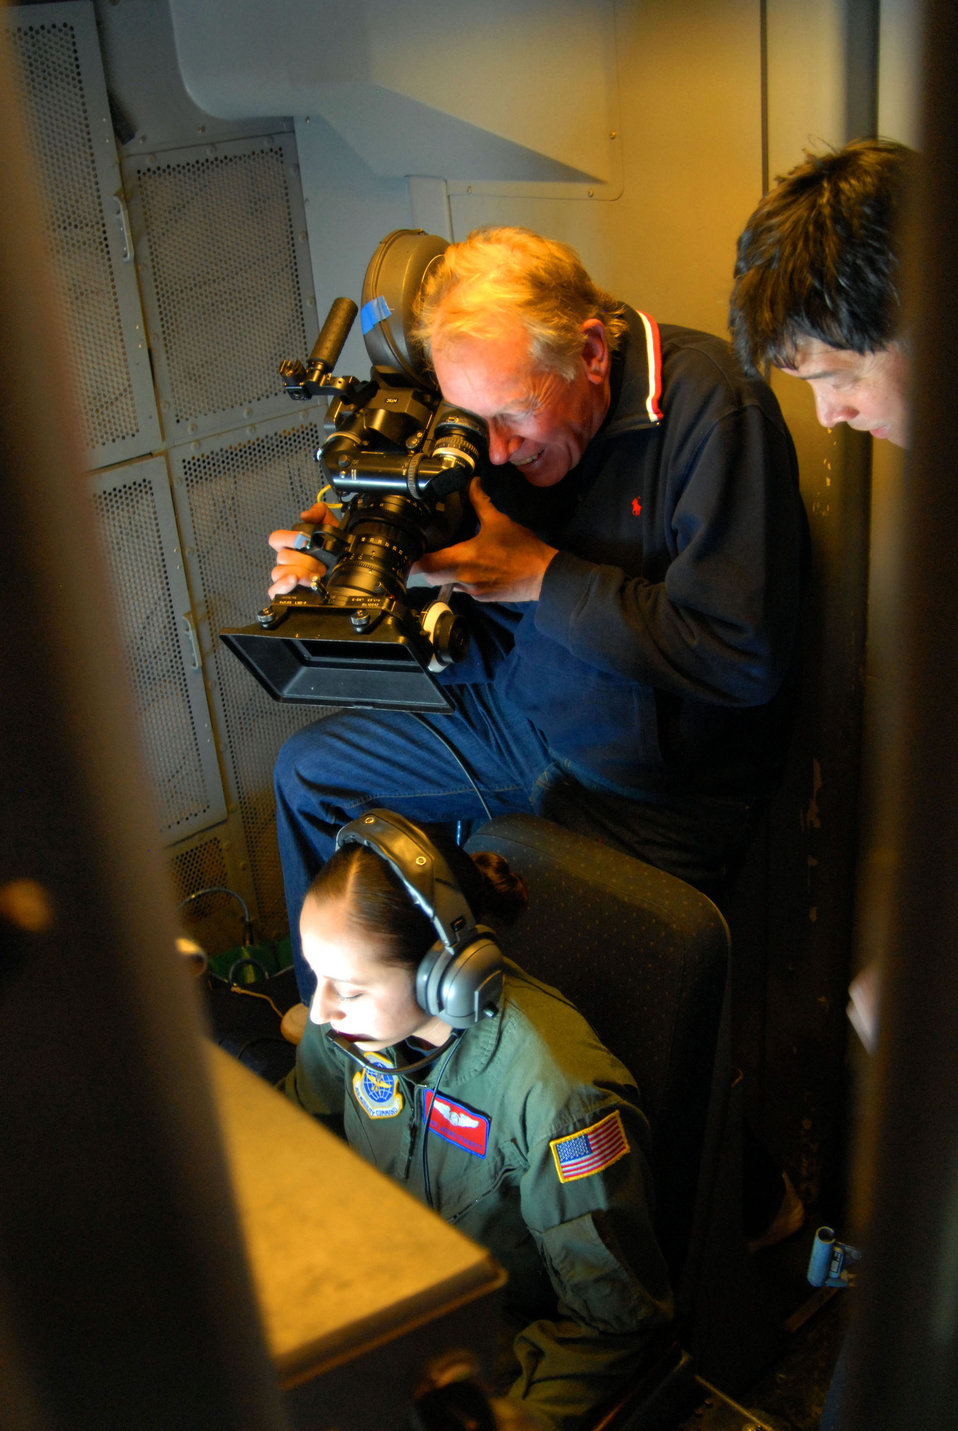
Edwards, Travis Airmen 'Do something amazing'

Eric Saarinen films over the shoulder of Staff Sgt. Lucero Stockett as she performs an aeriel refueling of an F-22 Raptor Feb. 7 on board a KC-10 Extender Feb. 7 above Edwards Air Force Base, Calif. Camera crews were at Edwards AFB Feb. 6 to 8 filming one of three new Air Force commercials. The two other commercials will feature the newly created Air Force Cyber Command and Air Force Space Command. Sergeant Stockett is a KC-10 boom operator from Travis AFB, Calif. Mr. Saarinen is a director and cameraman filming a new round of Air Force commercials.